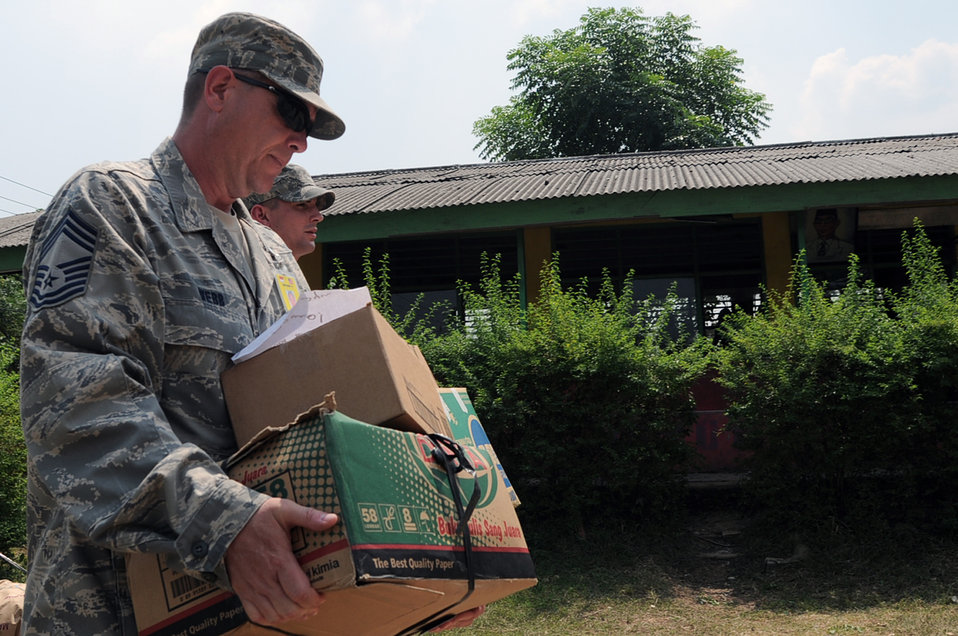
Yokota Airmen deliver school supplies to Indonesian school

Chief Master Sgt. Terry Webb carries donated school supplies during a goodwill visit to an elementary school in Binguang district, Indonesia, as part of Cope West 11. Chief Webb is the first sergeant with the Cope West 11 detachment from Yokota Air Base, Japan.